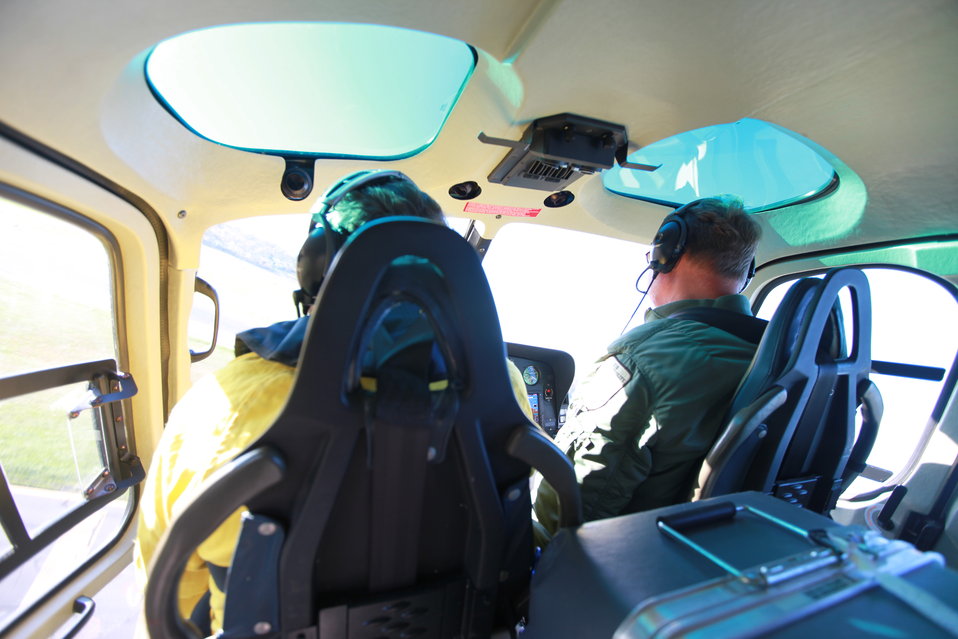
Refuge Manager Rick Potvin in helo (CT)

Stewart B. Mckinney NWR Refuge Manager Rick Potvin surveys damage to the refuge aboard the USFWS heliciopter.